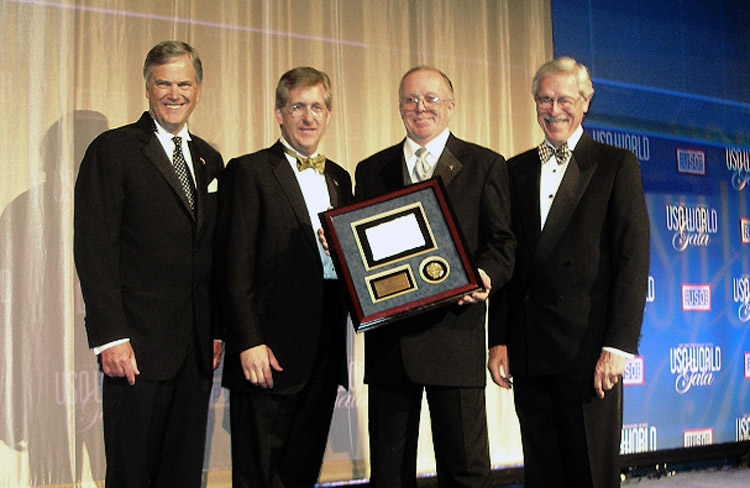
40 years later, Airman still serves

Edward Powell, Jr. and Dave McIntyre join the2007 United Services Organization Volunteer of the Year Award winner, Dave Wilson (third from left,) along with William Moll, during the USO World Gala Sept. 21 in Washington. Mr. Powell is the USO World Headquarters president, Mr. McIntyre is the TriWest Health Care Alliance president and Mr. Moll is the USO World Board of Governers chairman. Mr. Wilson is a retired Air Force member.